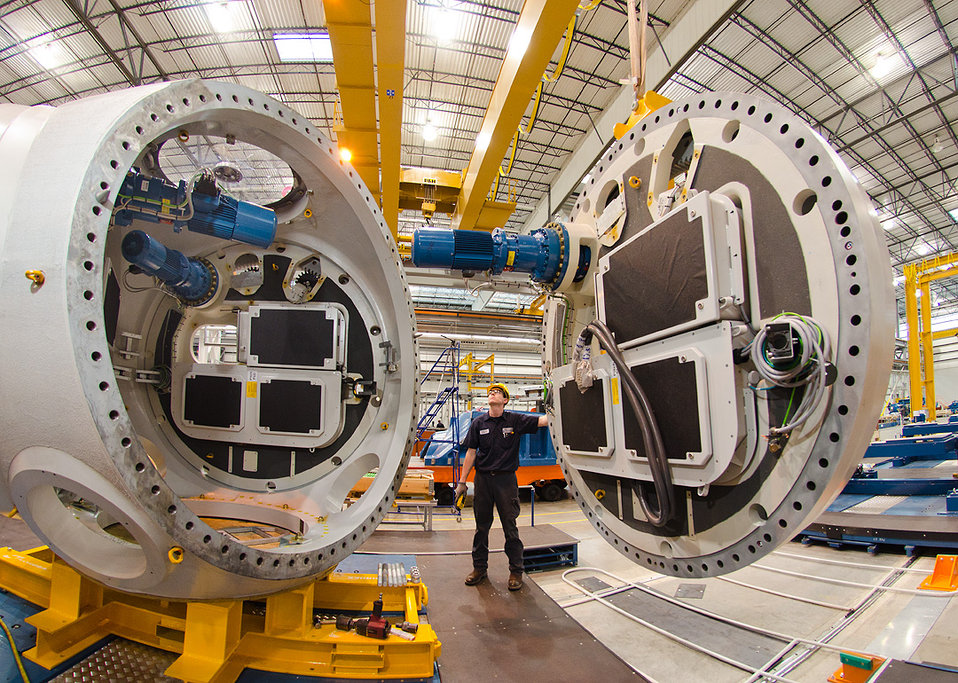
Nordex USA manufacturing facility - Jonesboro, Arkansas.